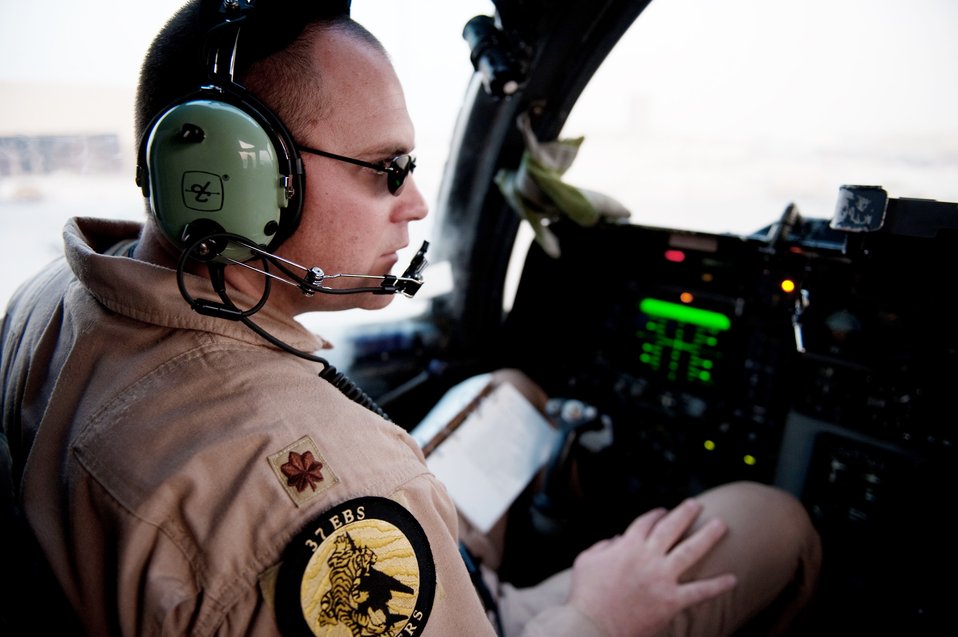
Checking out the B-1B for combat

Maj. Andrew Kowalchuk, 37th Expeditionary Bomb Squadron pilot, performs preflight checks on a B-1B Lancer Nov. 11, 2009, at an air base in Southwest Asia. Major Kowalchuk is deployed from Ellsworth Air Force Base, S.D.